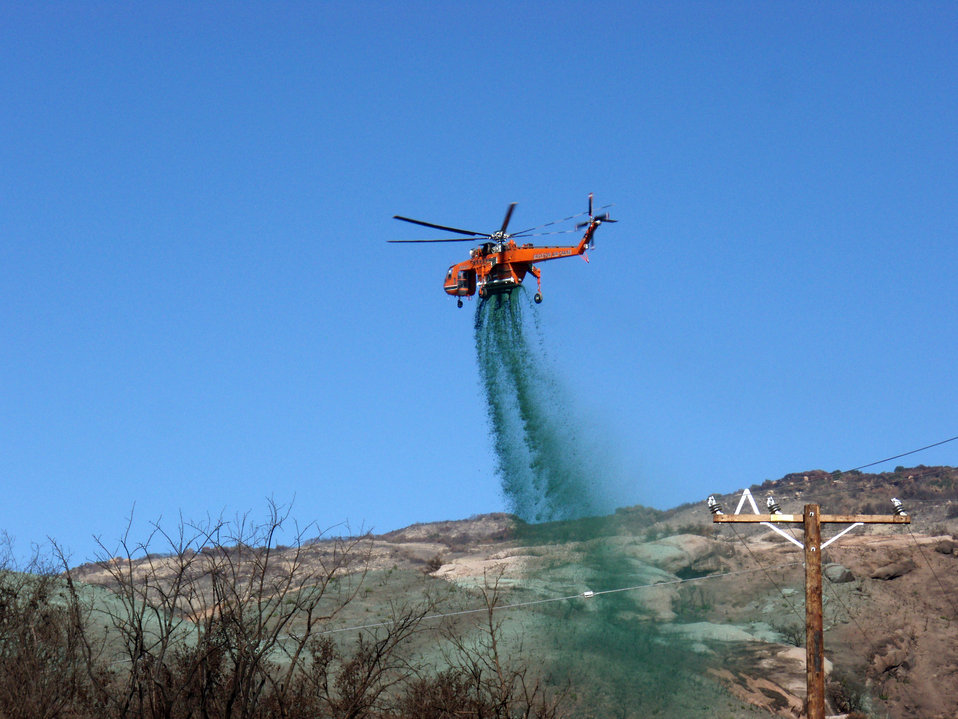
Green businesses

Hydromulch, used for reseeding and erosion control and manufactured by Fiberwood LLC at the former McClellan Air Force Base in Sacramento, Calif., is sprayed after a fire near Santa Barbara, Calif. The mulch, made of recycled newspaper, can be applied as soon as a fire is out.